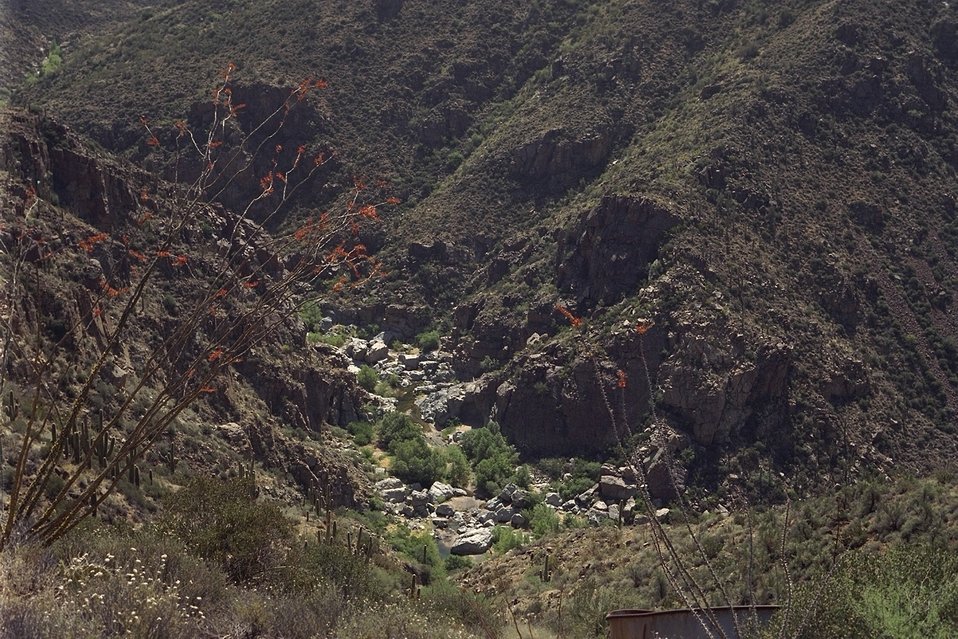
President Bill Clinton designated the Agua Fria National Monument in January of the year 2000.